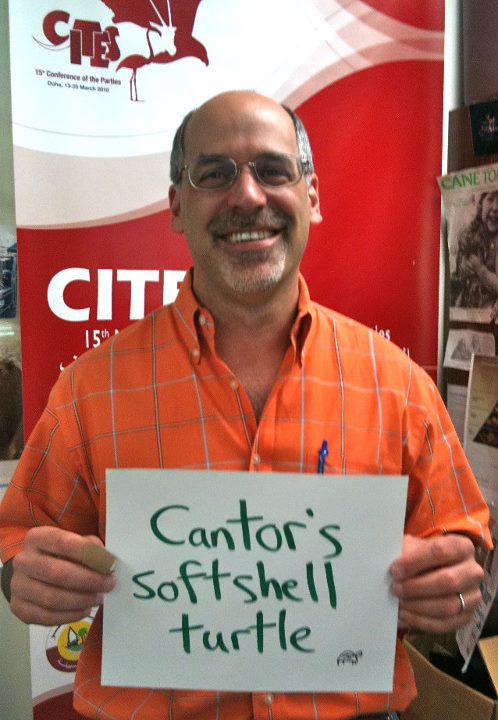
Bruce Weissgold, 'Cantor's Shoft Shell Turtle,'

International Affairs participates in FFI's In Our Hands campaign